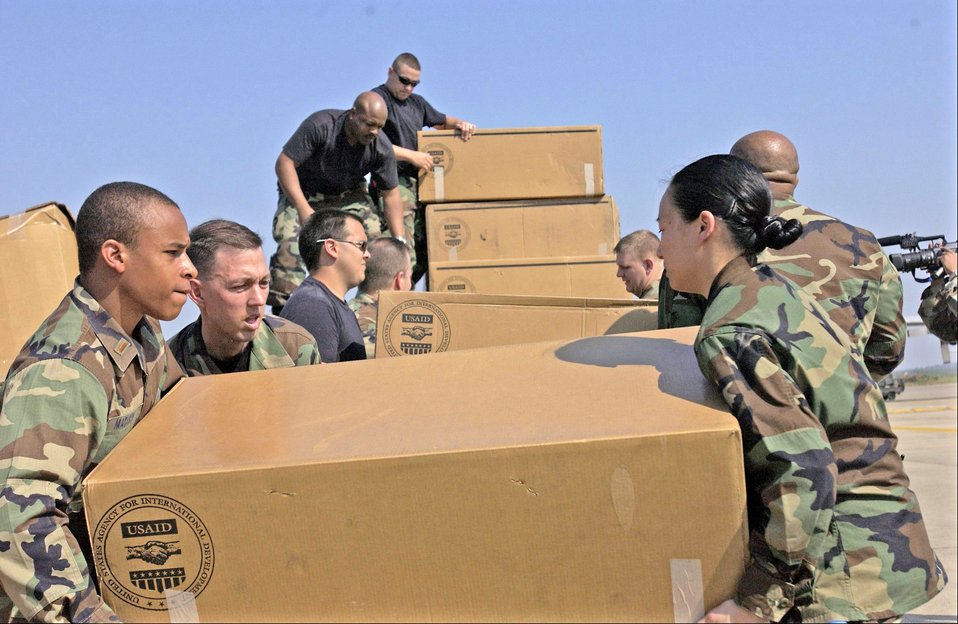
Operation Unified Assistance

UTAPOA, Thailand -- Airmen from the Air Force Tanker Airlift Control Element carry boxes of relief supplies Jan. 9 at the Royal Thai Naval Air Station here. The supplies were provided by the U. S. Agency for International Development. The Airmen are among 12,000 servicemembers deployed to Southeast Asia in support of Operation Unified Assistance, a massive international response to help the victims of the tsunami disaster.